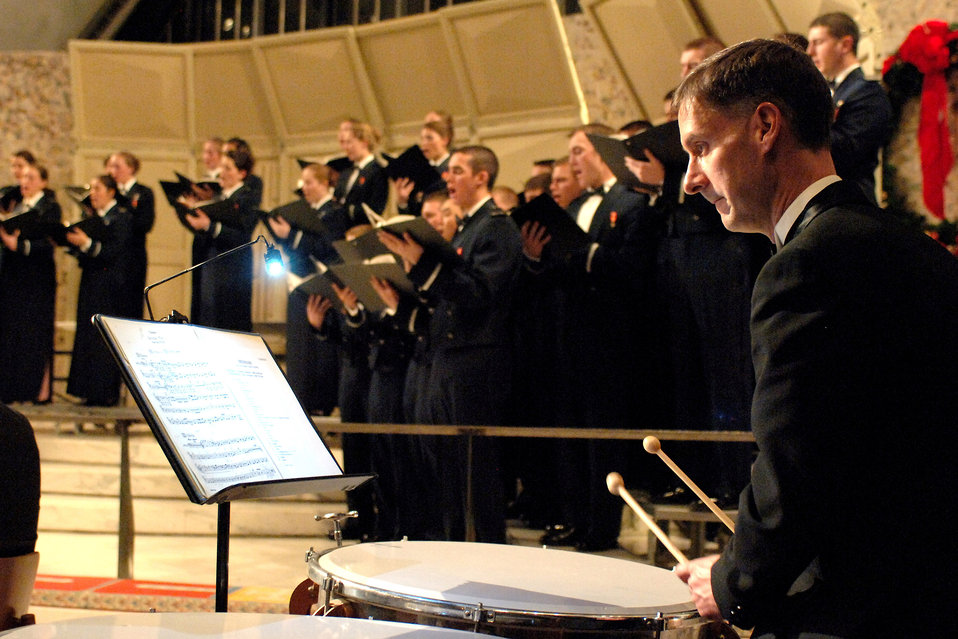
Cadet concert

Timpanist Michael Woods performs during the the annual U.S. Air Force Academy's